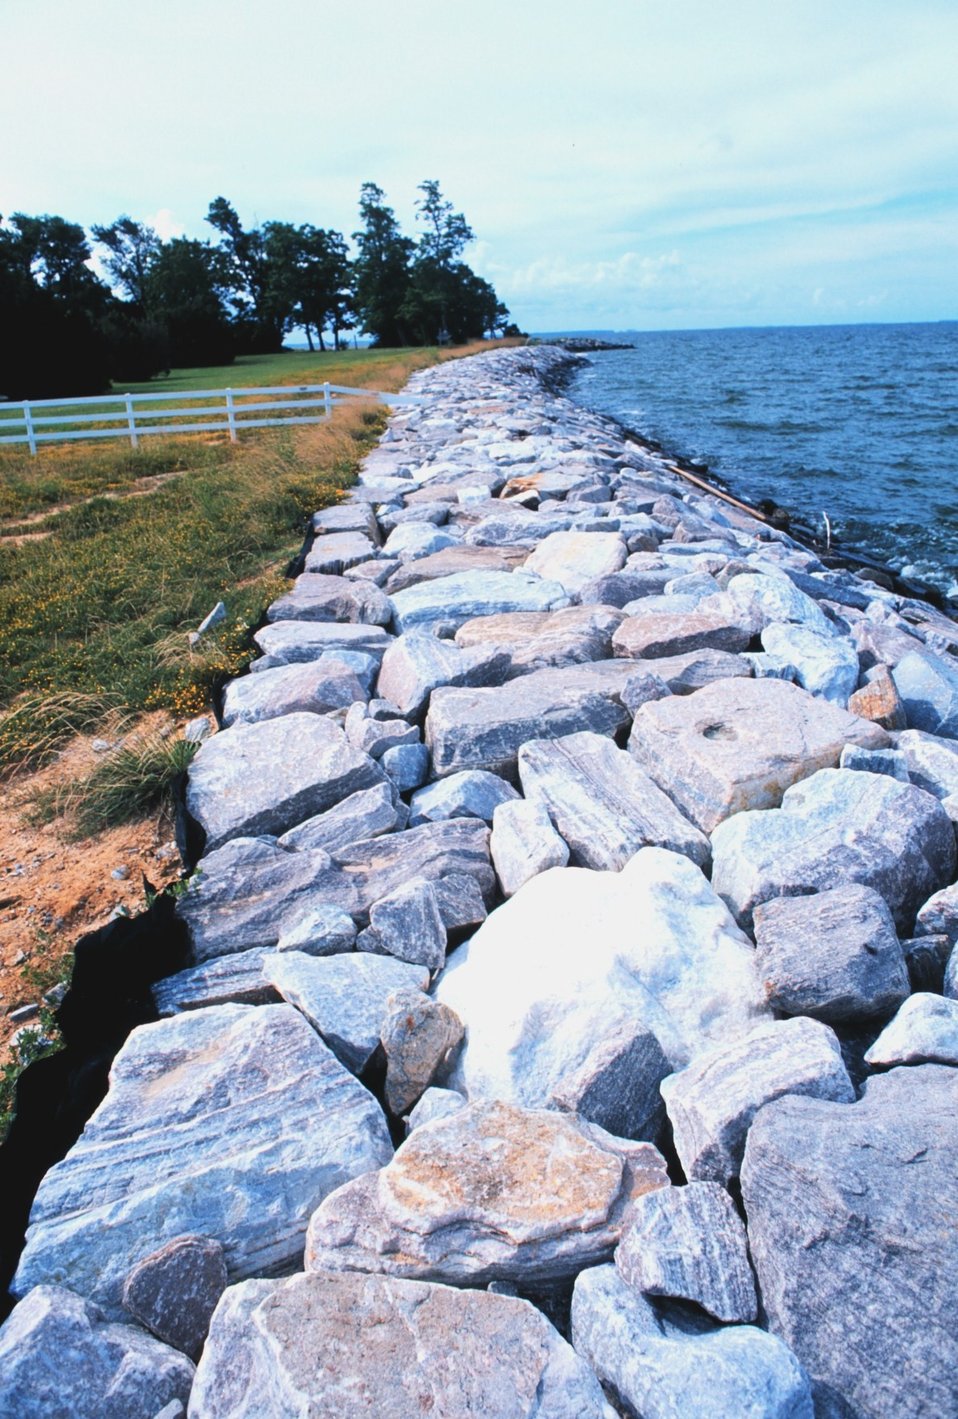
Rock seawall to mitigate erosion at the south end of Tilghman Island.